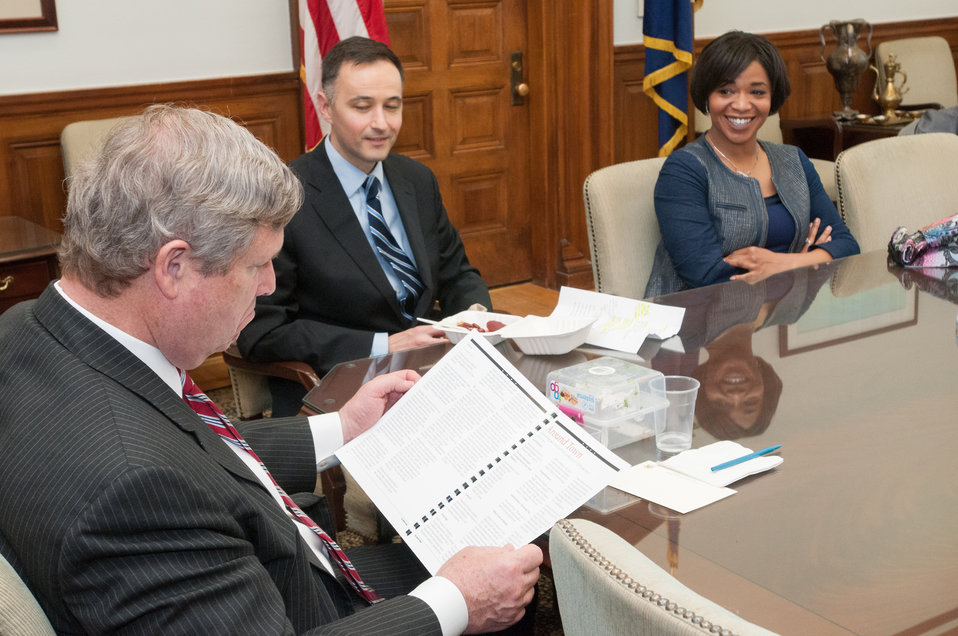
U.S. Department of Agriculture (USDA) Secretary Tom Vilsack, left, Foreign Agricultural Service Senior Advisor Patrick Kerrigan (center), and Civil Rights Adjudicator Cinnamon Butler (right), discuss the roles they play within the department, during a Brown Bag Lunch that Secretary Vilsack periodically has with employees, in his conference room,on Tuesday, April 9, 2013, in Washington, D.C.